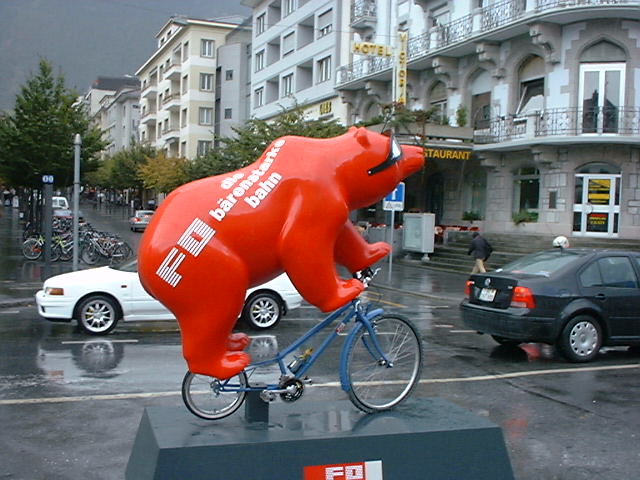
A bear on a bicycle outside Brig station, Wallis, Schweiz advertising the Furka-Oberalp-Bahn (English) or Furka-Oberalp-Bahn (German) on a wet day.